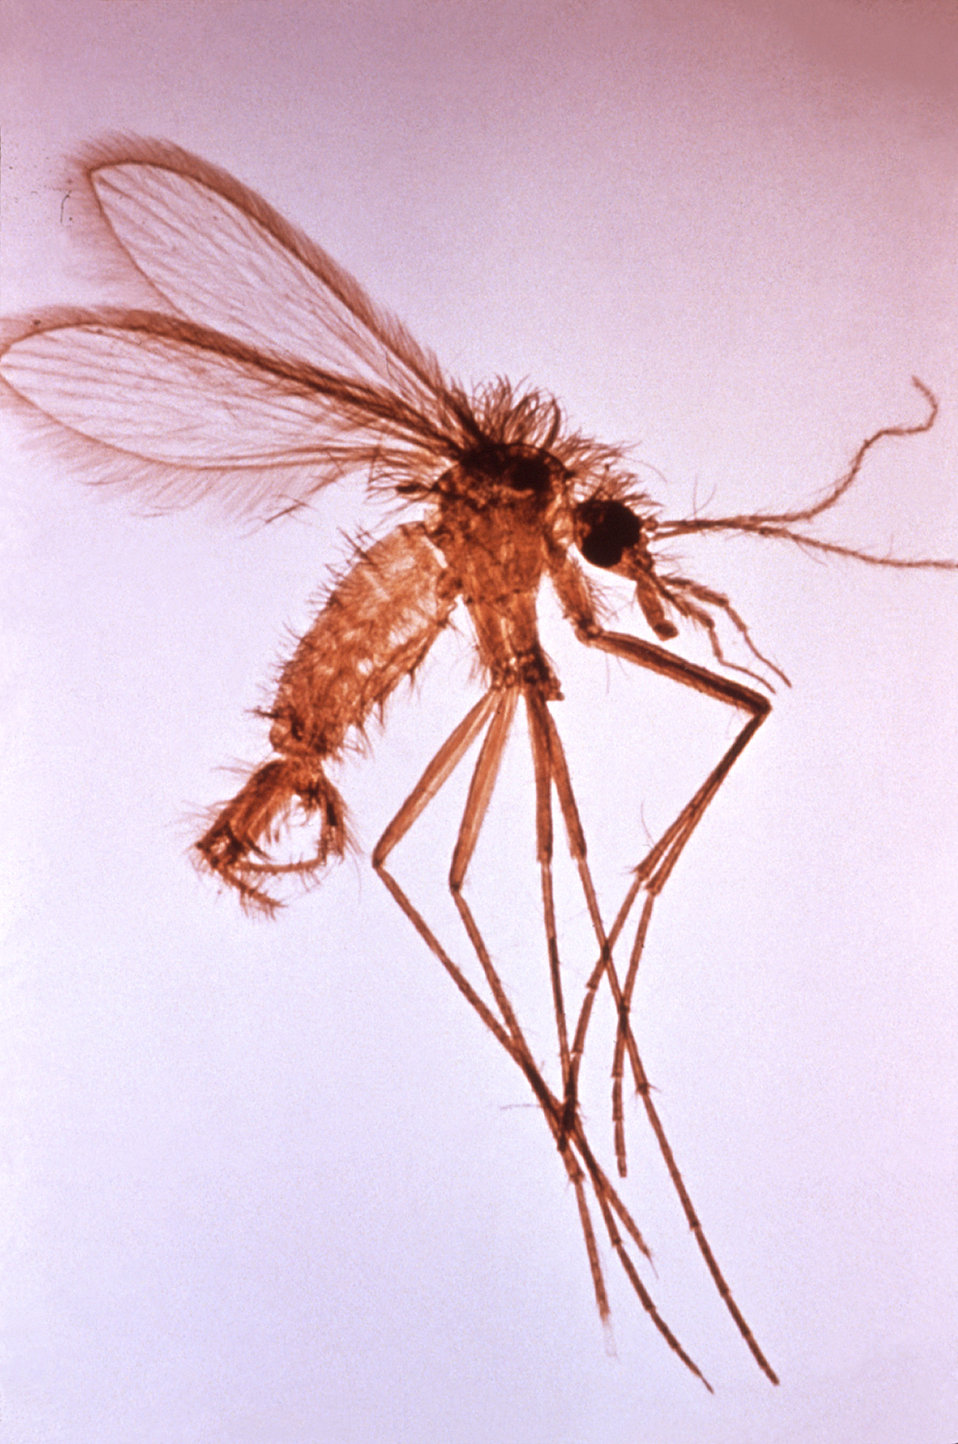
This image depicts a mounted male Phlebotomus sp. fly, which due to its resemblance, may be mistaken for a mosquito.